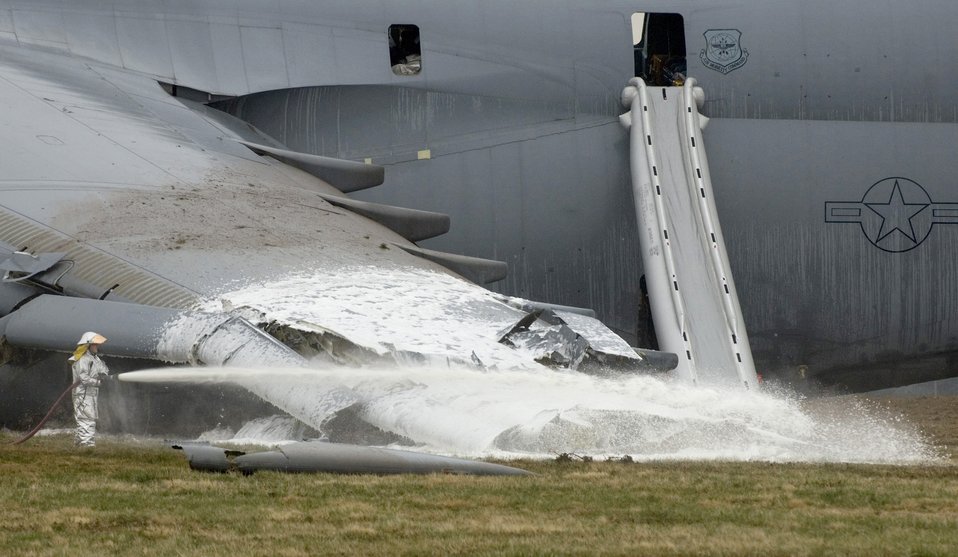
C-5 Galaxy crashes at Dover AFB

A firefighter hoses down the crash site of a C-5 Galaxy. The aircraft crashed at 6:30 a.m. EDT, on Monday, April 3, 2006, at Dover Air Force Base, Del., just south of the base flightline. All 17 people aboard survived the crash.